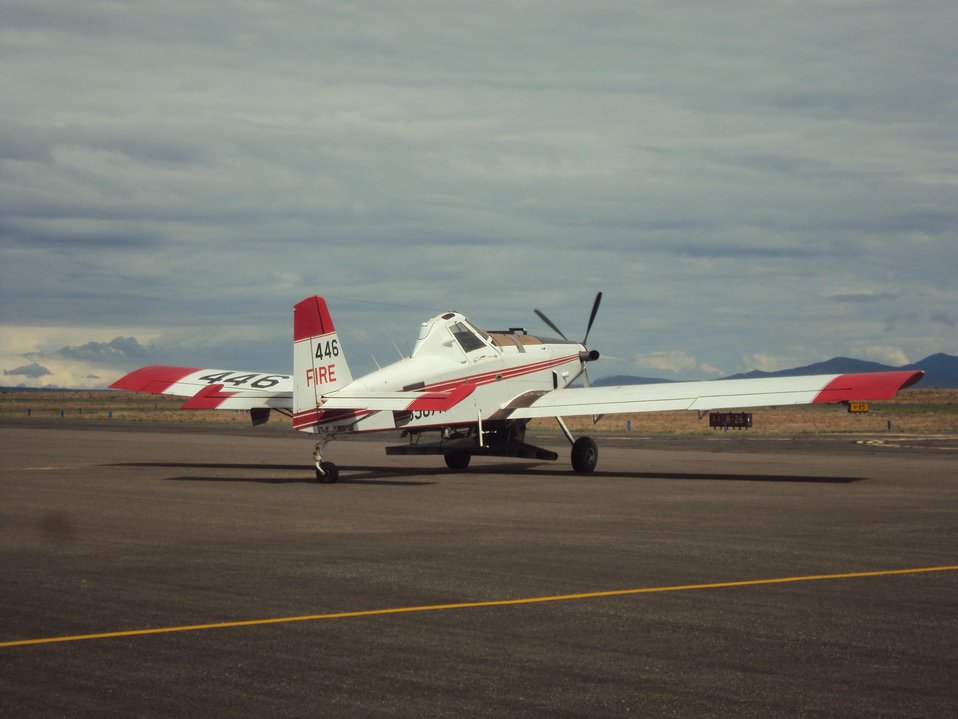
A single engine Air Tractor agricultural plane is used for seeding operations severe burned areas from the Silver Fire in the Gila National Forest near Kingston, NM. The Silver Post Fire response has the Burned Area Emergency Response (BAER) team beginning operations to seed acres of high burn severity and to mulch additional acres. Seeding reduces effects to downstream life, property, and infrastructure by reducing erosion and runoff. Areas of high burn severity are to be seeded with a quick germinating, non-persistent annual cereal barley that would provide rapid ground cover. A small percentage of native perennial species would also be included to give the burned area a jump start in natural recovery, and provide for long-term ground cover. Mulch is the most effective treatment for controlling erosion and runoff, as it provides immediate ground cover. Mulch also assists in stabilizing soil in and around these areas. Aircraft for seeding operations will be based at the Gila National Forest Air Tanker Base.